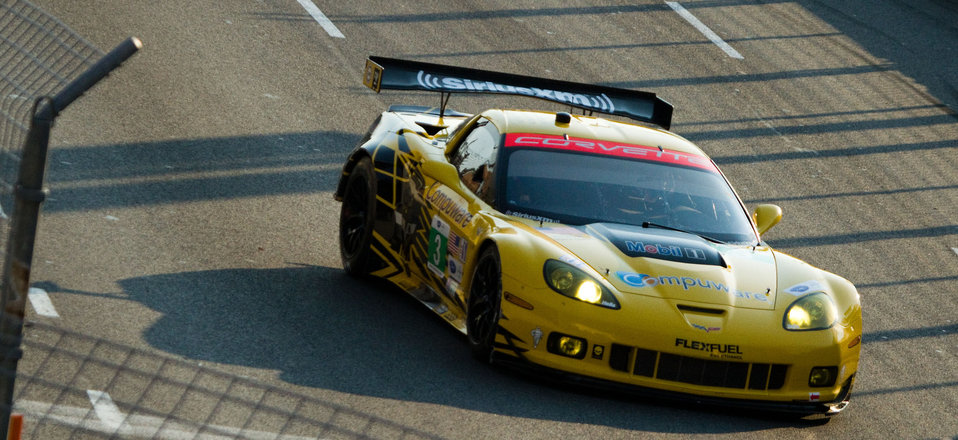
The #3 Corvette (Grand Touring class) of Corvette Racing Team uses E85 fuel for the American Le Mans Series (ALMS) motorsport series at the Baltimore Grand Prix, on the streets of downtown Baltimore, MD, on Friday, August 31, 2012, Labor Day Weekend. ALMS says they are “the Global Leader in Green Racing by being the only racing series recognized to comply with the Green Racing protocols developed by the U.S. Department of Energy (DOE), the U.S. Environmental Protection Agency (EPA) and Society of American Engineers International (SAE).” Instead of high-octane gasoline all the cars in the series use one of 5 different forms of energy (system). Clean diesel, E85, E10, isobutanol or hybrid energy technology. The specific hybrid system, used by the Porsche GT3 cars, are a (battery-less) flywheel-based Kinetic Energy Recovery Systems. These organizations are accelerating technology development at speeds up to 200 mph, in 650-700 horsepower race cars that are based on two groups of cars; the purpose built prototype race cars and the GT
(Grand Touring) cars based on production sports cars that you can see in showrooms. From these groups, there are five classes of cars, all of which race at the same time during the race events.
The U.S. Department of Agriculture (USDA) focuses on renewable fuel sources that are profitable and sustainable. 2011 accomplishments include research and planning for renewable energy and investments in renewable energy production.
- Completed a Biofuels Roadmap proposing a plan of action to meet congressionally mandated RFS2 goals for national biofuels production.
-Coordinated five regional research centers to work on the science necessary to ensure profitable biofuels can be produced from a diverse range of feed stocks across the nation, not just in the Midwest where the industry is already thriving.
-Over three years, USDA invested about $320 million to accelerate research on renewable energy ranging from genomic research on bioenergy feedstock crops, to development of biofuel conversion processes and costs/benefit estimates of renewable energy production.
- More than 130 biodiesel and ethanol projects funded by USDA are currently producing almost 3.7 billion gallons of biodiesel and ethanol annually, enough fuel – in equivalence to gasoline – to keep five million vehicles on the road every year.
-We are supporting efforts to build five biorefineries to produce advanced biofuels in states from Florida and Michigan to New Mexico, with investments worth about $310 million. We are supporting facility upgrades and feasibility studies for advanced biofuels projects in every region of the country.